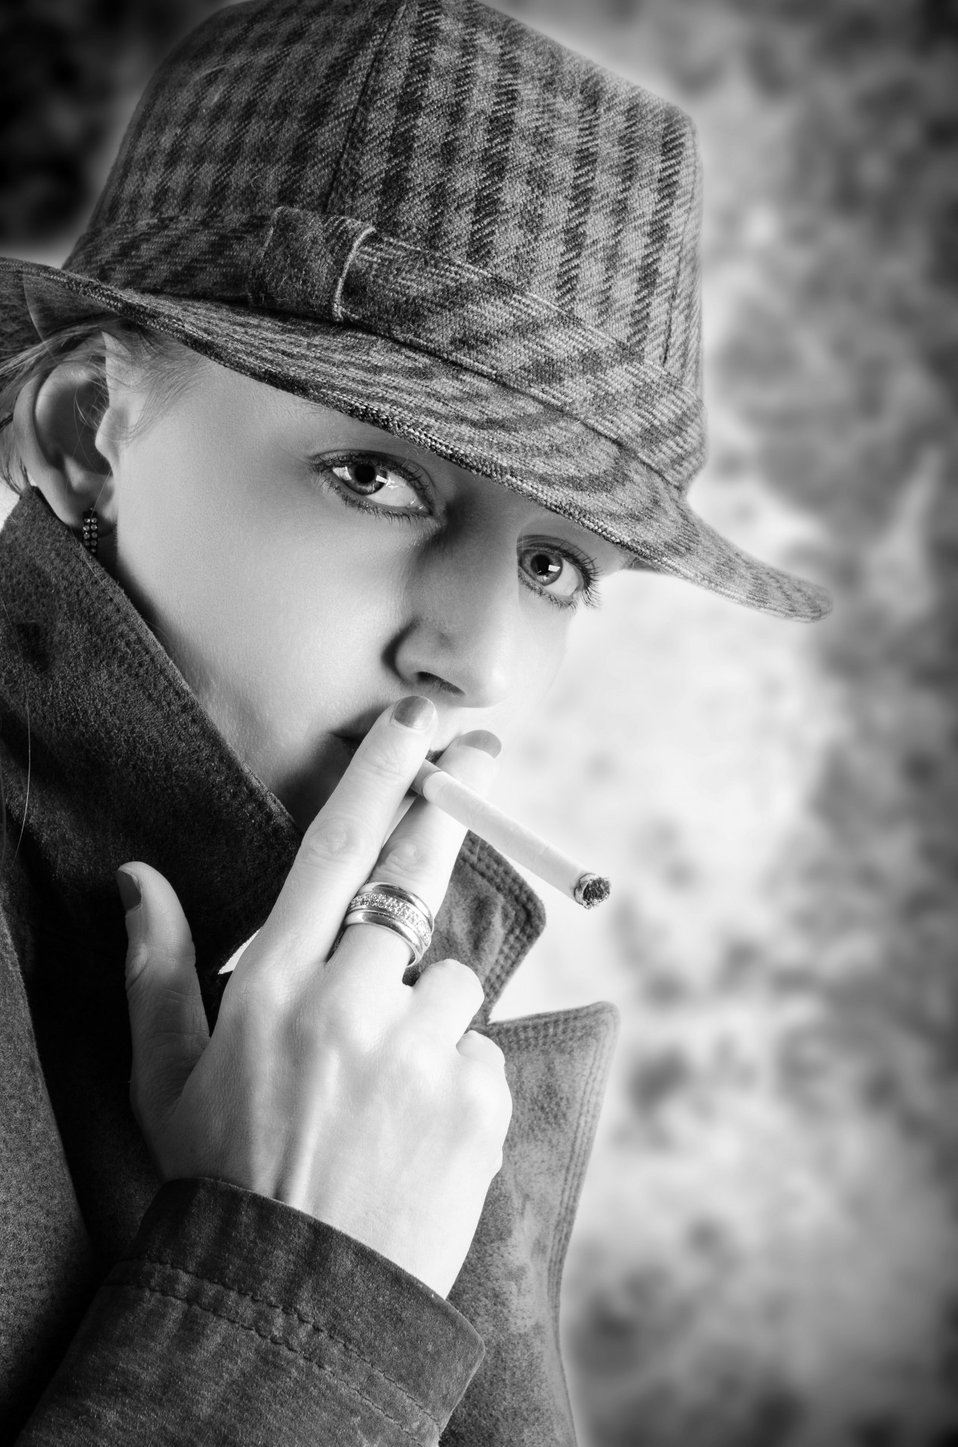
Woman smokes a cigarette.